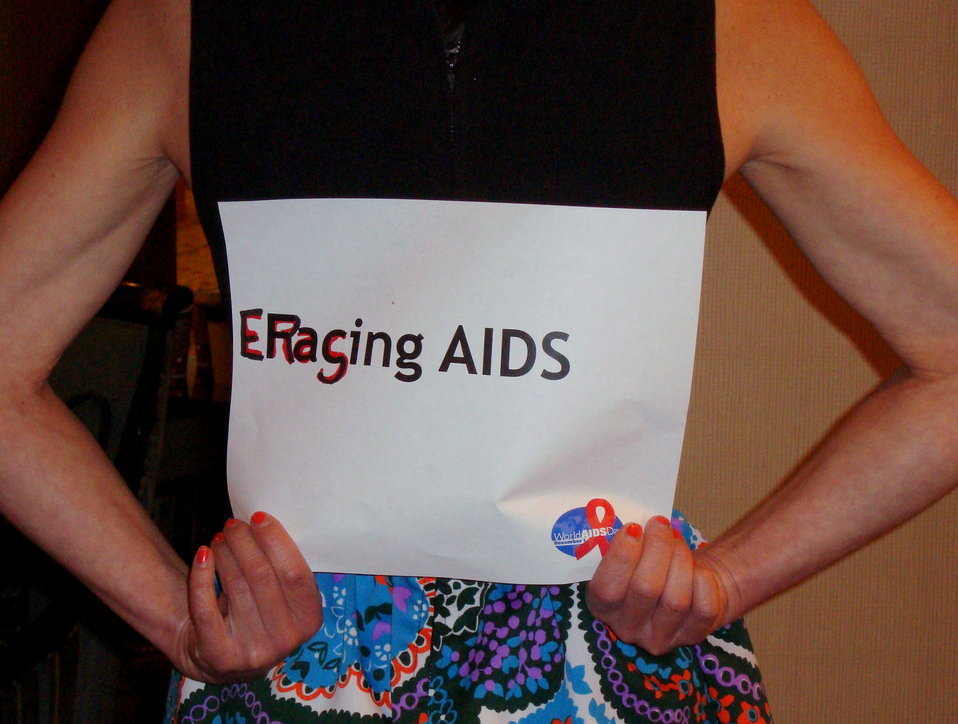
FacingAIDSCampaign 041